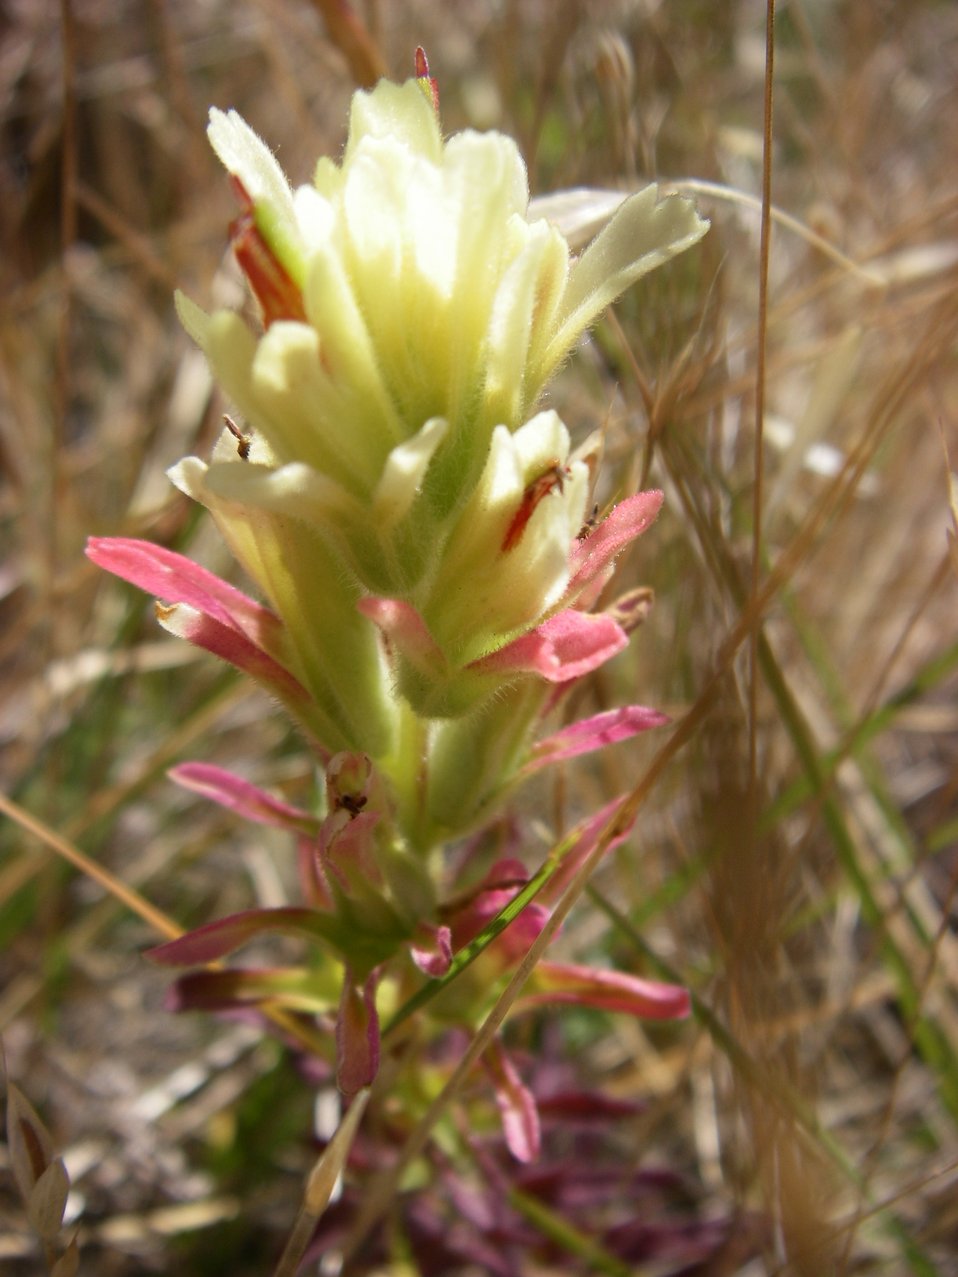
Tiburon Paintbrush